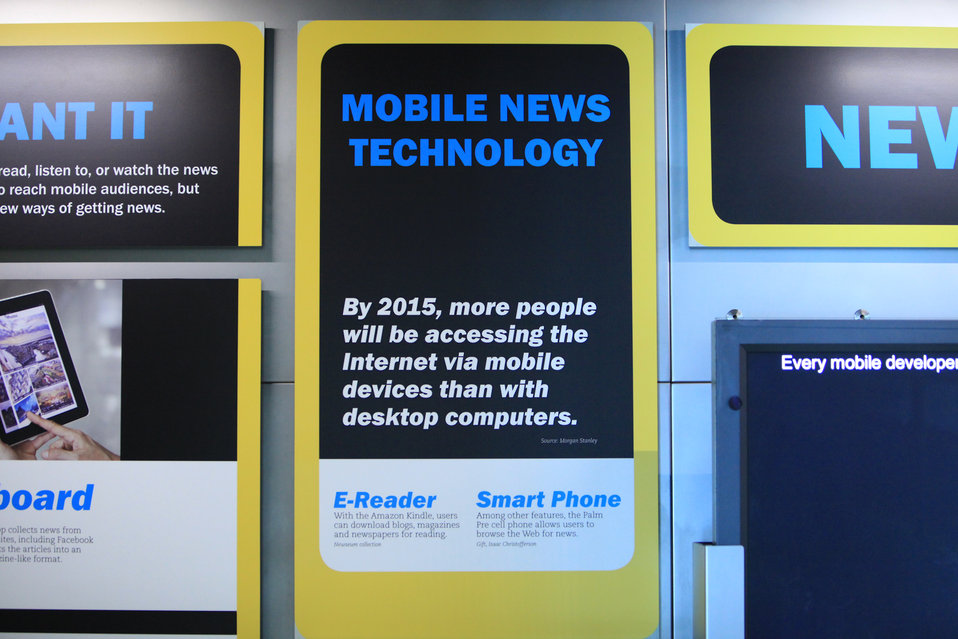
Mobile News Technology Signage

Digital Learning Day Town Hall in Washington, DC, February 1, 2012.